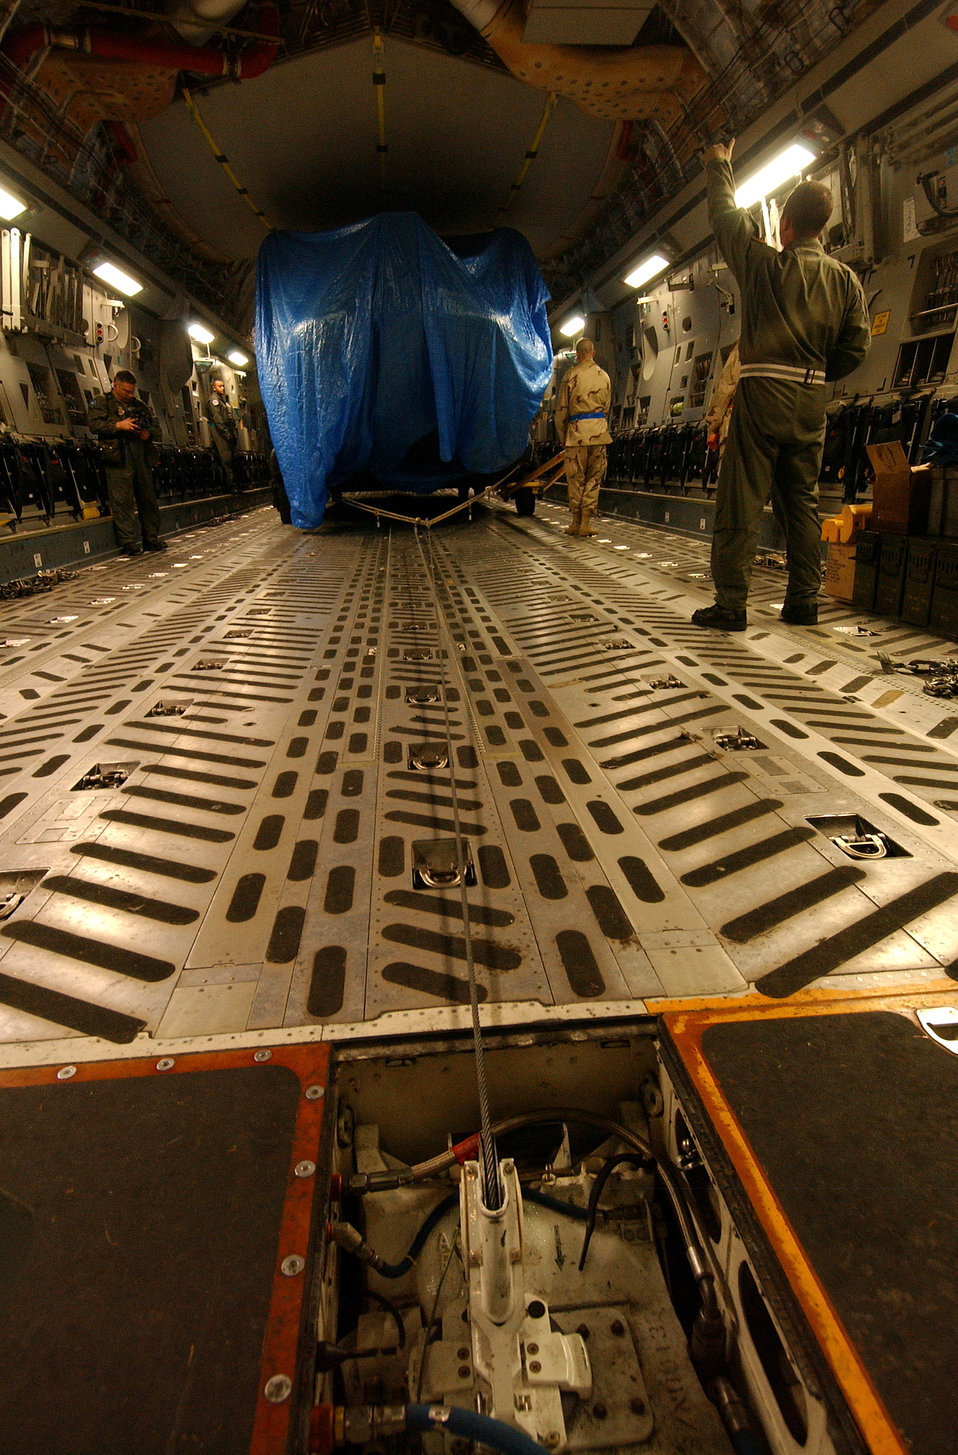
Pakistan relief

ROTA, Spain (AFPN) -- Airmen load CH-47 Chinook helicopters from Fort Sill, Okla., onto C-17 Globemaster IIIs here. Maintainers will assemble the helicopters at their destination, then flown in humanitarian missions in support of Pakistan earthquake victims. Airmen loaded the helicopters Oct. 24.